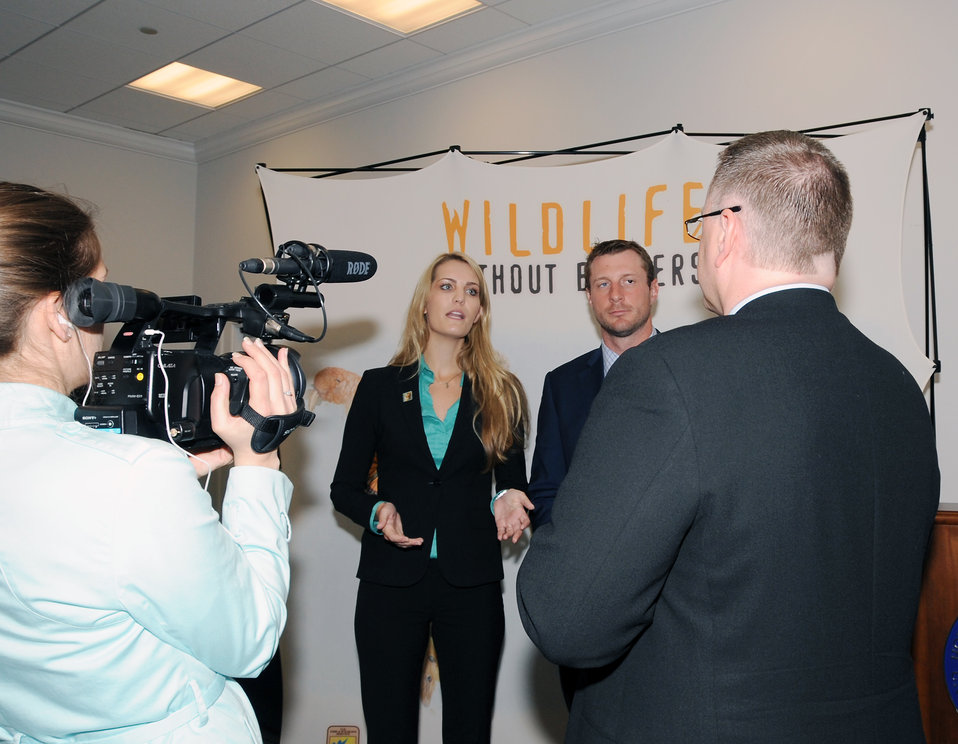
Save Vanishing Species on Capitol Hill

FWS interview Erica May and Max Scherzer